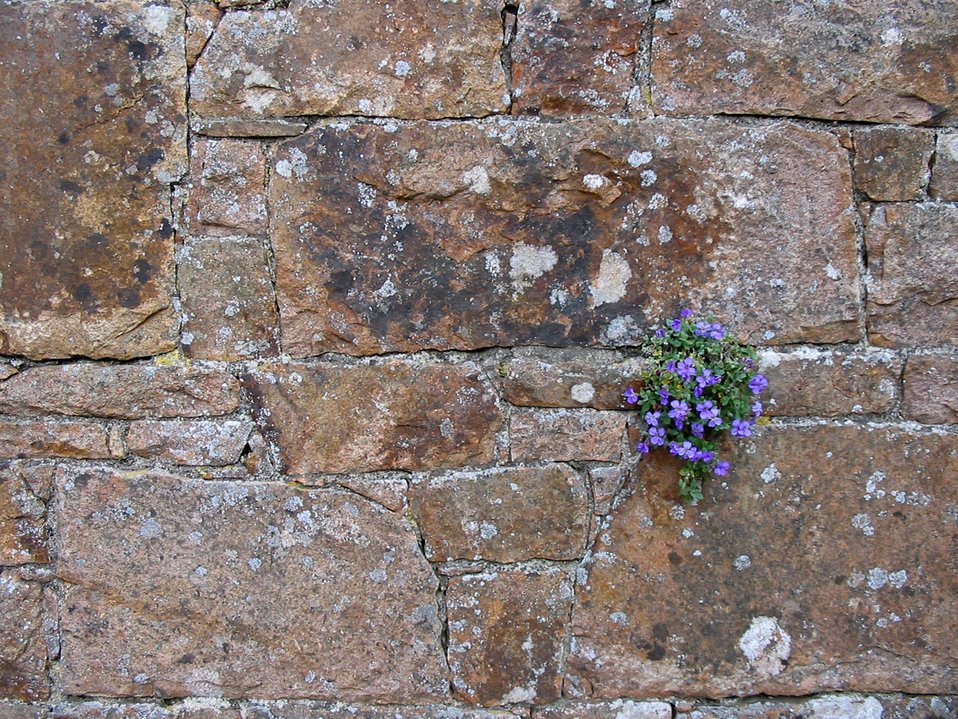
Flowers on the wall

Flowers growing from the wall.